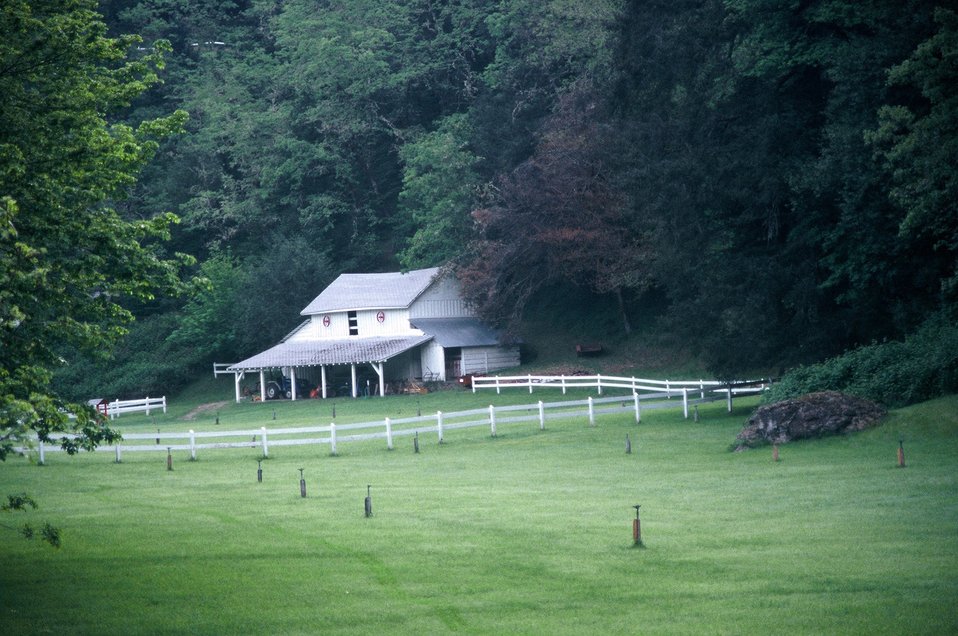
Wild section of the Rogue River from Grave Creek to Foster Bar May 19 to May 22.